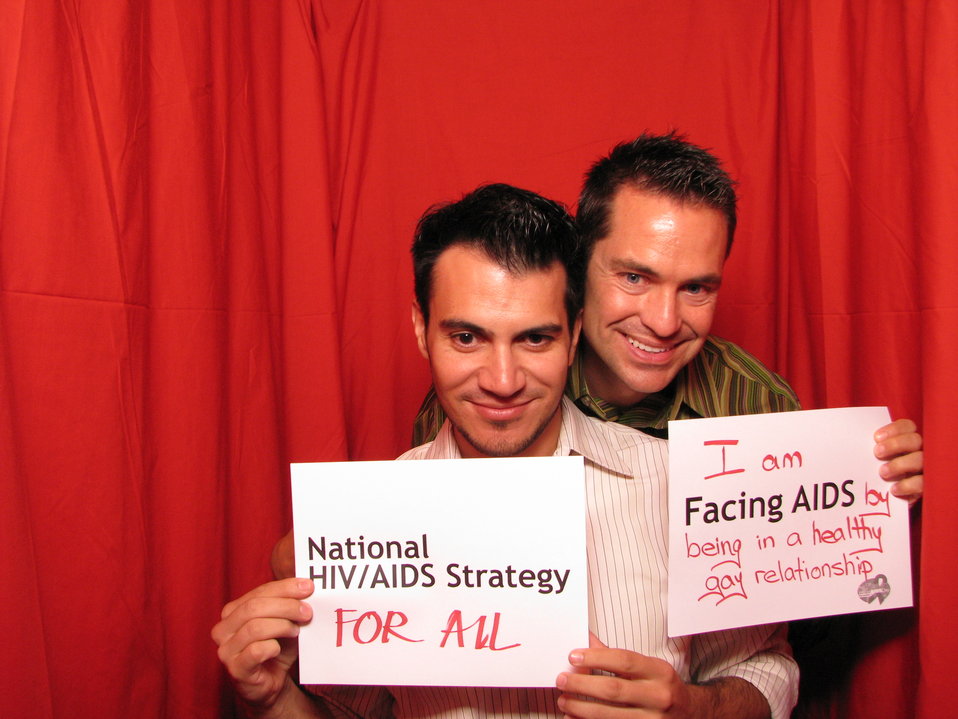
National HIV/AIDS Strategy FOR ALL. I am FACING AIDS by being in a Healthy Gay Relationship.

From the AIDS.gov photo booth at the U.S. Conference on AIDS, September 2010 (Orlando, FL).